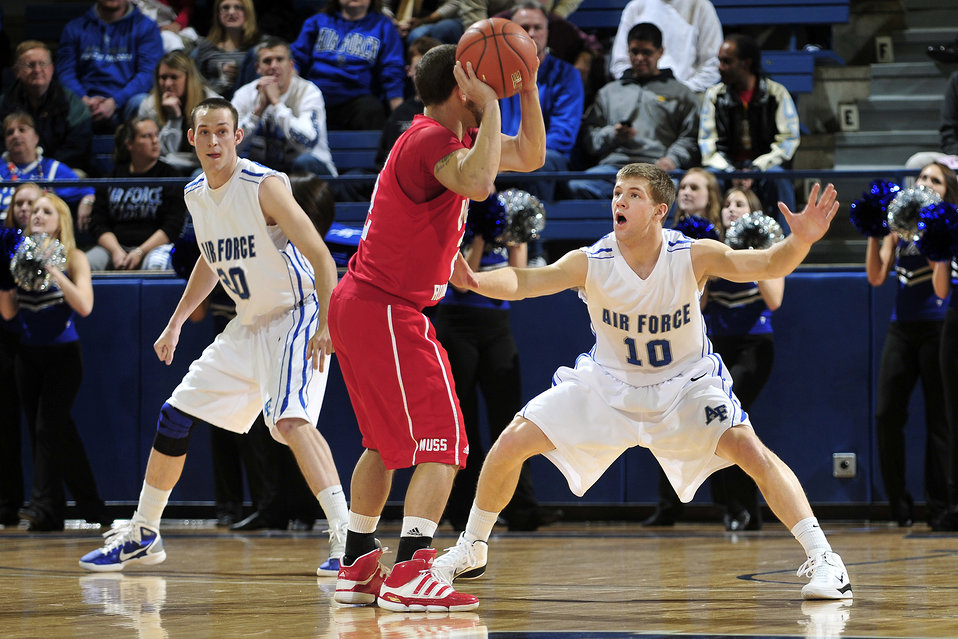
Falcons win home opener

Air Force Academy sophomore Todd Fletcher plays tight defense on Utah's Chris Kupets during the Falcons Mountain West Conference home opener Jan. 5, 2011, at the Academy's Clune Arena in Colorado Springs, Colo. The Falcons upset the Utes 77-69.